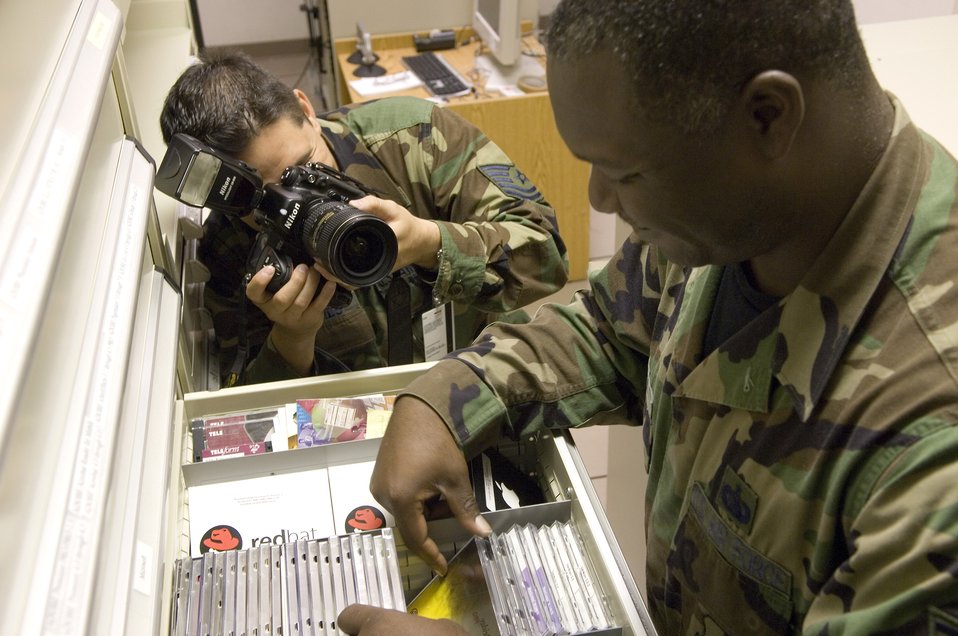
Air Force Link highlights Air Force birthday

Tech. Sgt. Cecilio Ricardo photographs Tech. Sgt. Kevin Johnson inventorying software at the Air Force News Agency in San Antonio. On-the-job photos and stories of Airmen at work worldwide will be posted on the Air Force Link Web site all day Sept. 18 as the service commemorates its 59th birthday. Photos and stories will be updated throughout the day.